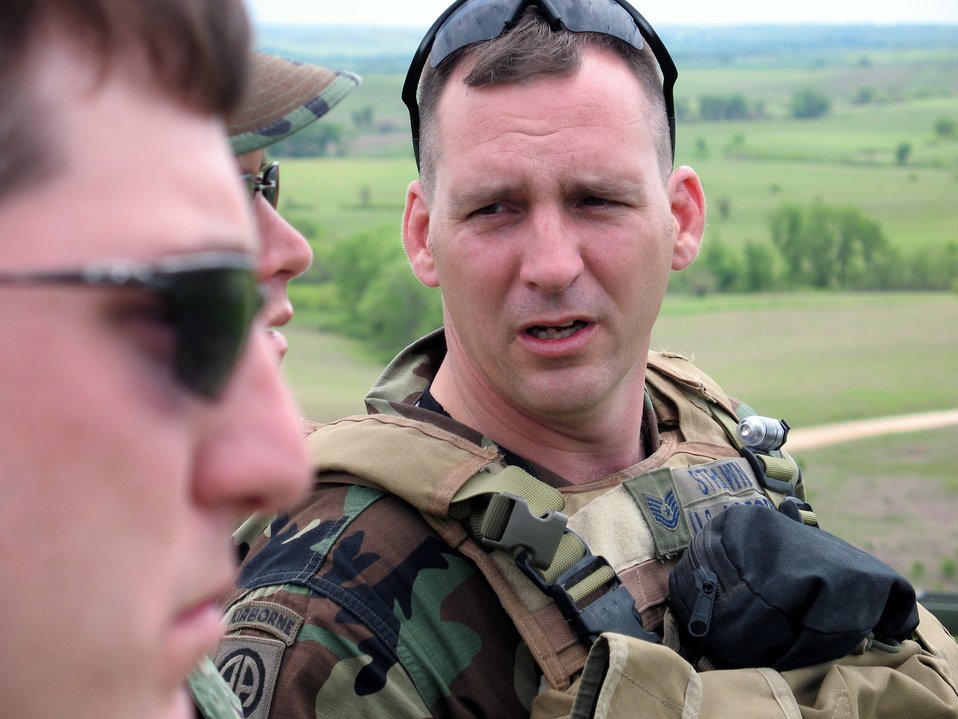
Attack controllers call in air strikes at Kansas range

Tech. Sgt. John Strawn briefs fellow joint terminal attack controllers before the arrival of F-16 Fighting Falcons to the Smoky Hill Air National Guard Range, Kan. The JTACs stationed in Germany traveled to Kansas for training on the range. Sergeant Strawn is a JTAC from the 1st Air Support Operations Squadron.